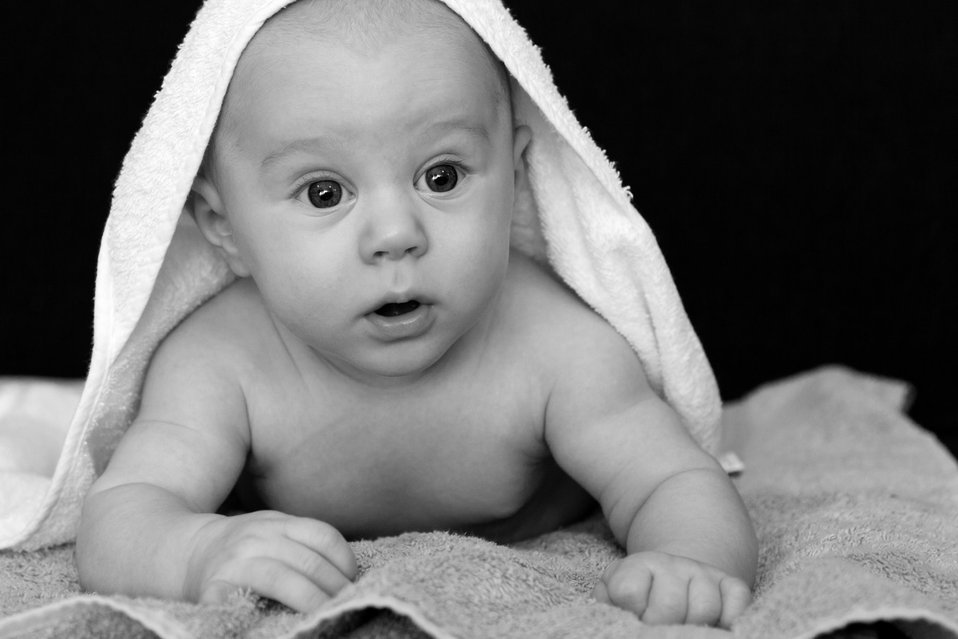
Baby under the towel in black and white.